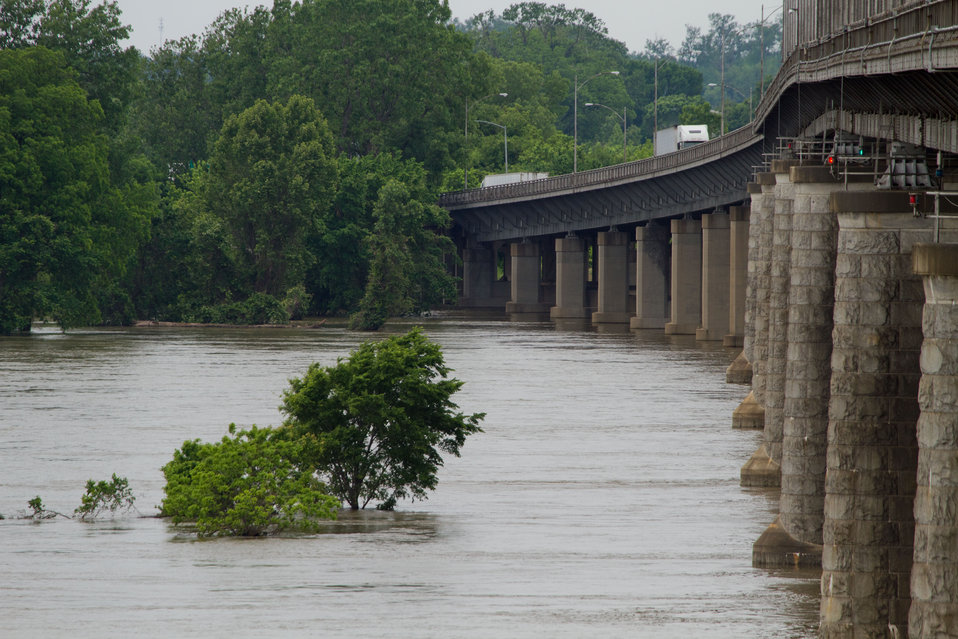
The rising water of the Mississippi River overflowed the banks covering mature trees on both side of the river. The view is from Crump Park near Memphis, TN, on Saturday, May 14, 2011. The Harahan Bridge is on the right of the picture.